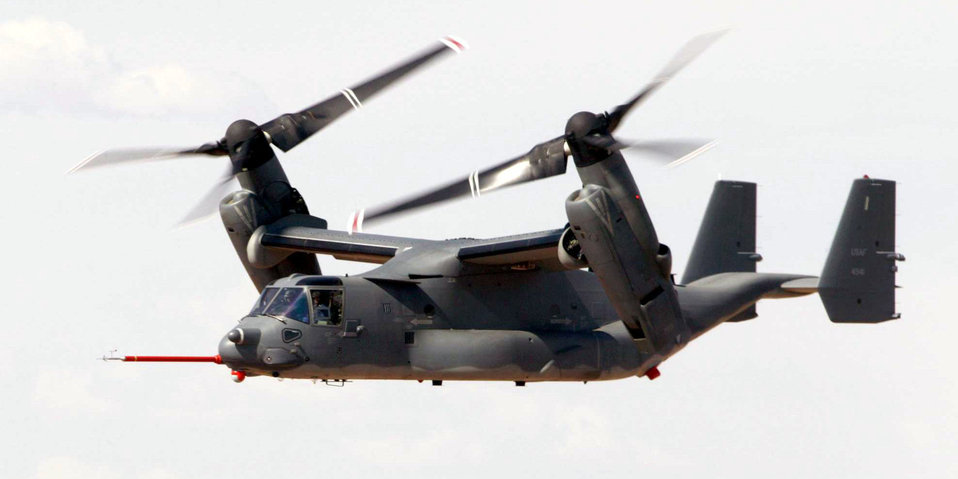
Osprey takes flight

EDWARDS AIR FORCE BASE, Calif. -- Osprey 9 flies a test mission. The ship returned to flight July 14 after nearly two years of modifications. The aircraft has updated electrical, hydraulic, electronic warfare and heat-seeking missile countermeasures.